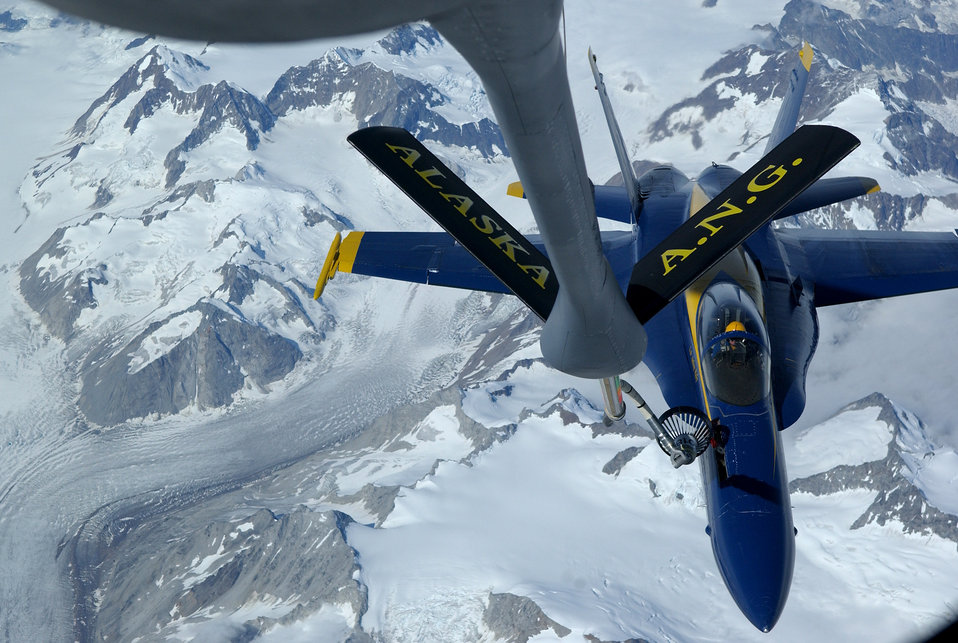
Blue Angels over Alaska

A KC-135 Stratotanker refuels an F/A-18 Hornet from the Navy's Blue Angels on its way from an air show at Elmendorf Air Force Base, Alaska, on Aug. 14. The KC-135 is with the 168th Air Refueling Wing at Eielson AFB, Alaska.